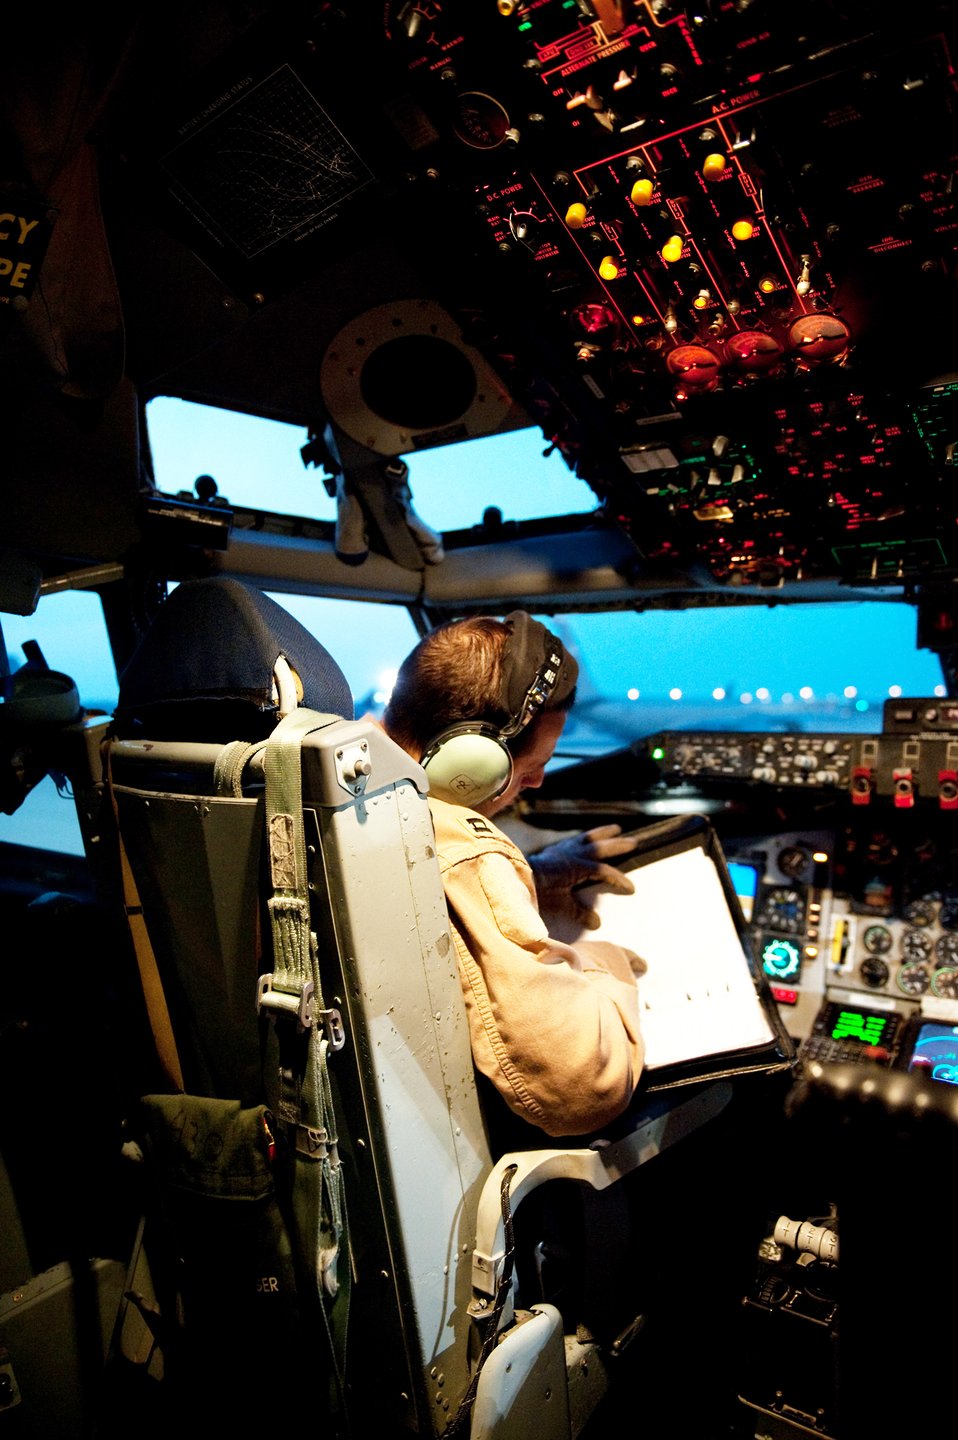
KC-135 crews prepare for mission

Capt. Adam Kornitzer, 340th Expeditionary Air Refueling Squadron pilot, conducts a preflight check of a KC-135 Stratotanker, Dec. 2, 2009, in Southwest Asia.